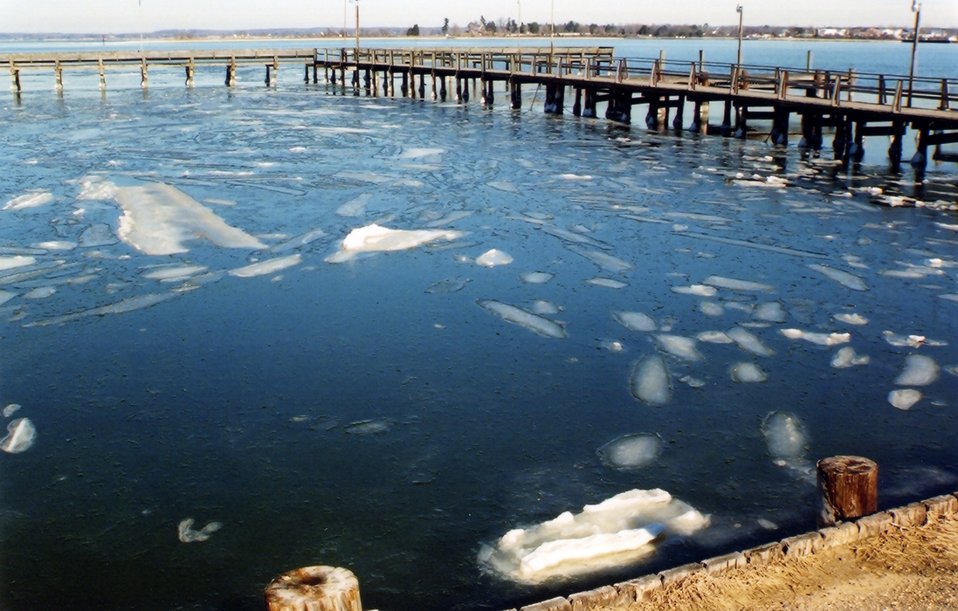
Patuxent River version of icebergs.